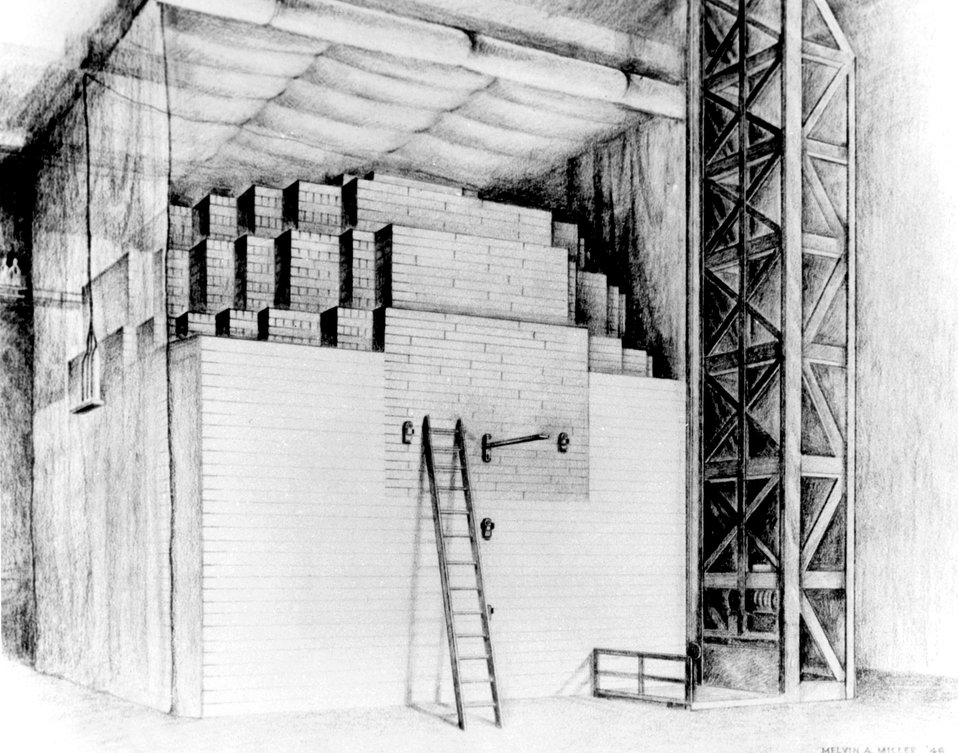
This is one of two drawings of Chicago Pile 1 made in 1946 by artist Melvin A. Miller.